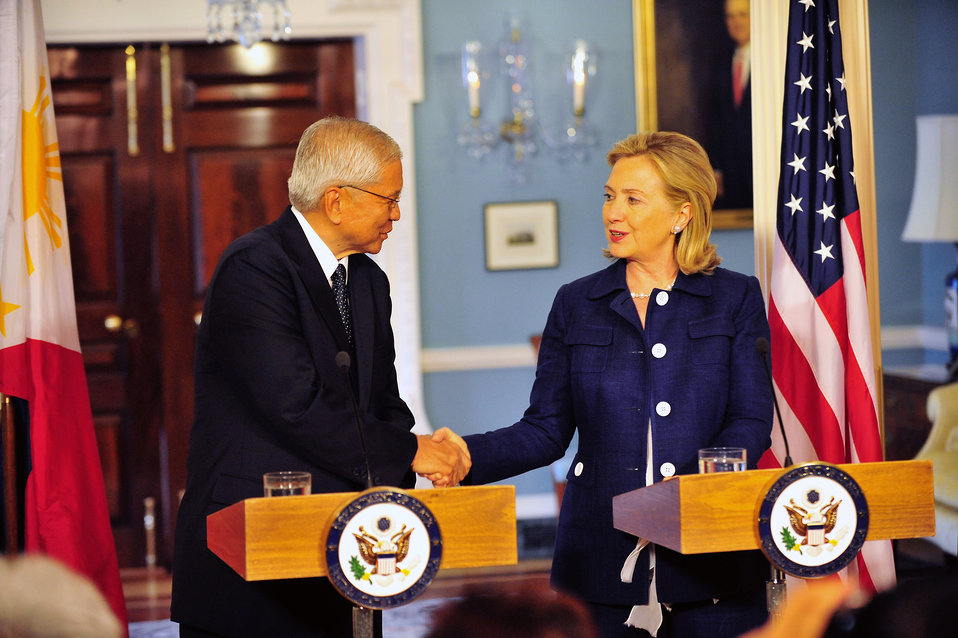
Secretary Clinton Shakes Hands With Philippines Foreign Minister Del Rosario

U.S. Secretary of State Hillary Rodham Clinton shakes hands with Philippines Foreign Minister Del Rosario after their bilateral meeting at the U.S. Department of State in Washington, D.C., on June 23, 2011.